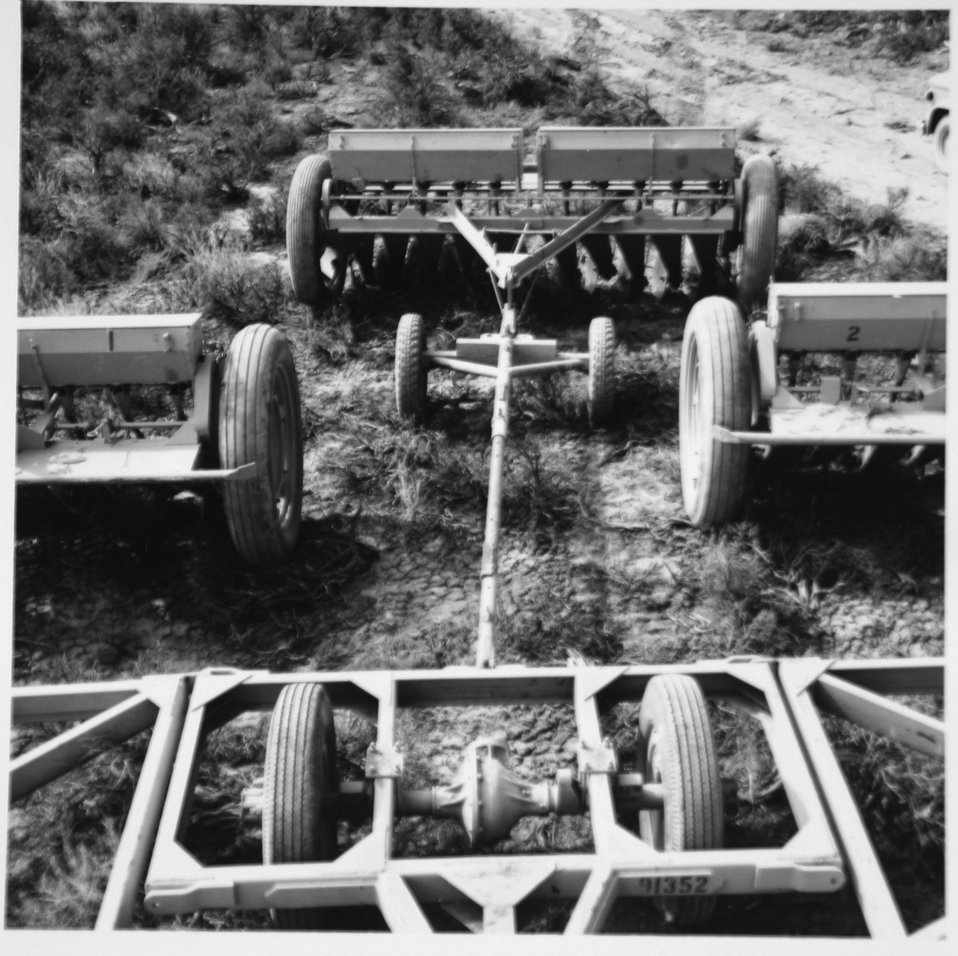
Three drill hitch Burns District Sept. 1964